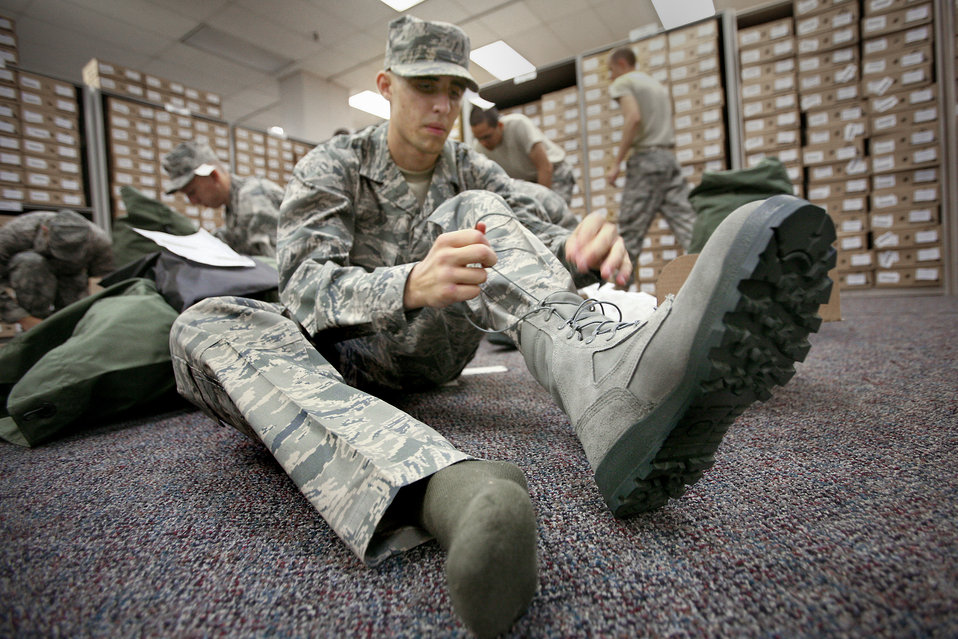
Getting the 'boot'

Trainee Kyle Bean laces up the new air battle uniform, or ABU, boots during the first clothing issue Sept. 10 at Lackland Air Force Base, Texas. He is in the first flight to receive the ABU boot in basic military training.